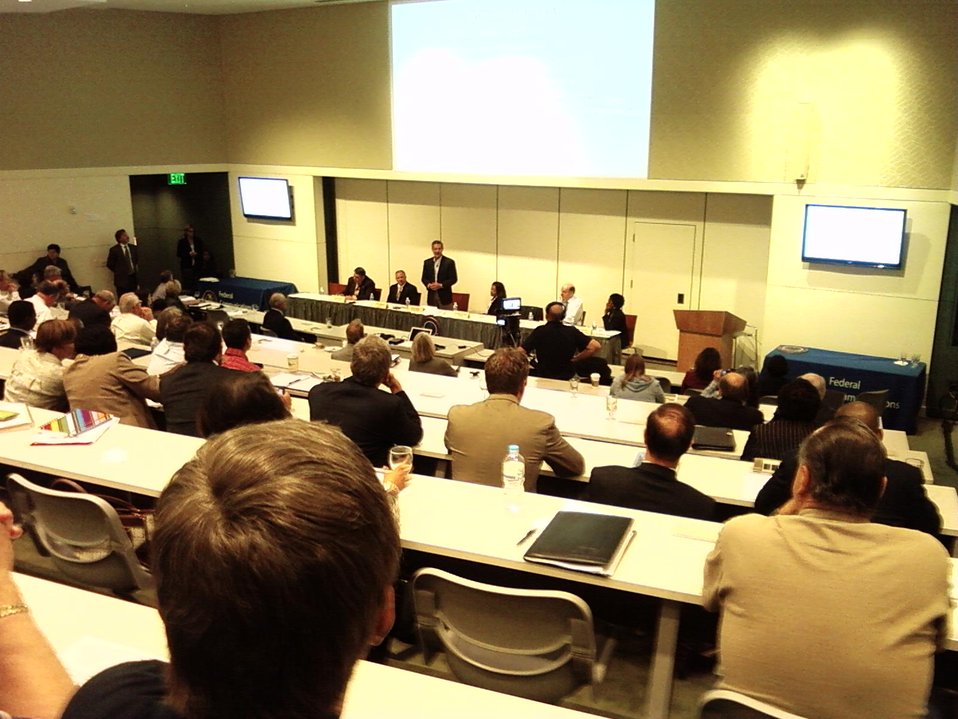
sc event 19

Broadband Field Hearing, in Charleston, South Carolina. 10-06-09